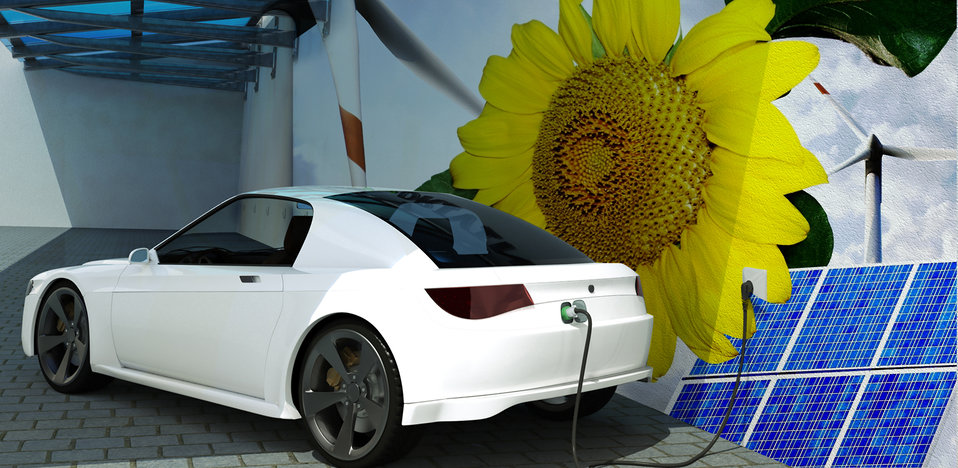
PLUG-IN HYBRID CAR.

At Argonne National Laboratory, plug-in hybrid electric vehicles use electricity instead of gasoline.